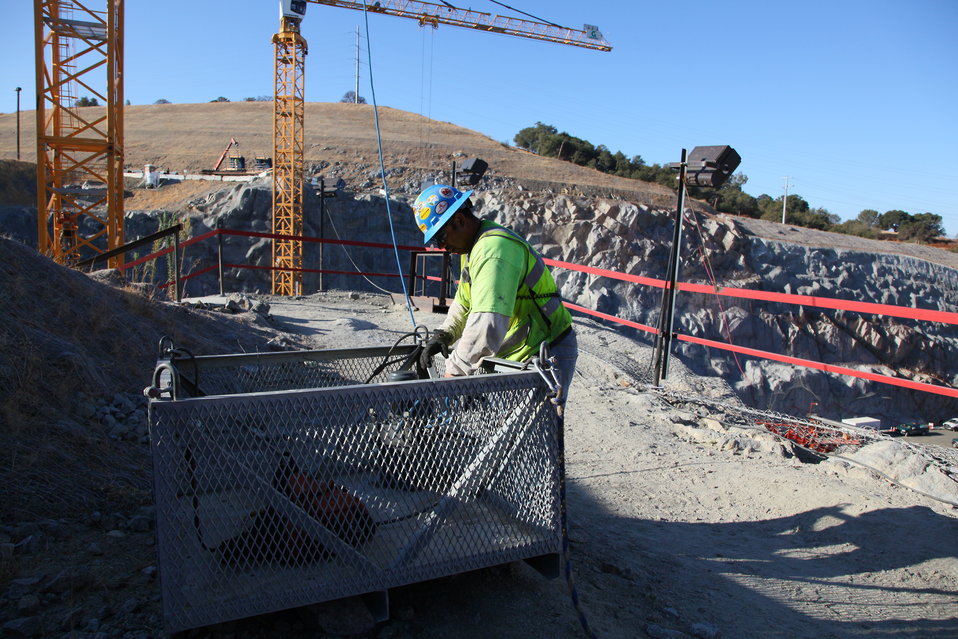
Safety a priority at Folsom Dam project

A contractor for the U.S. Army Corps of Engineers Sacramento District prepares a water pump in a crane lift basket to be lowered into the construction zone at the auxiliary spillway at the Folsom Dam in Folsom, Calif., Sept. 19, 2012. Safety at the job site is a number one priority; equipment and personal safety are a requirement. The Sacramento District is building the spillway in cooperation with the U.S. Bureau of Reclamation, the Central Valley Flood Protection Board and the Sacramento Area Flood Control Agency to improve the safety of the existing dam and reduce flood risk for the greater Sacramento area.